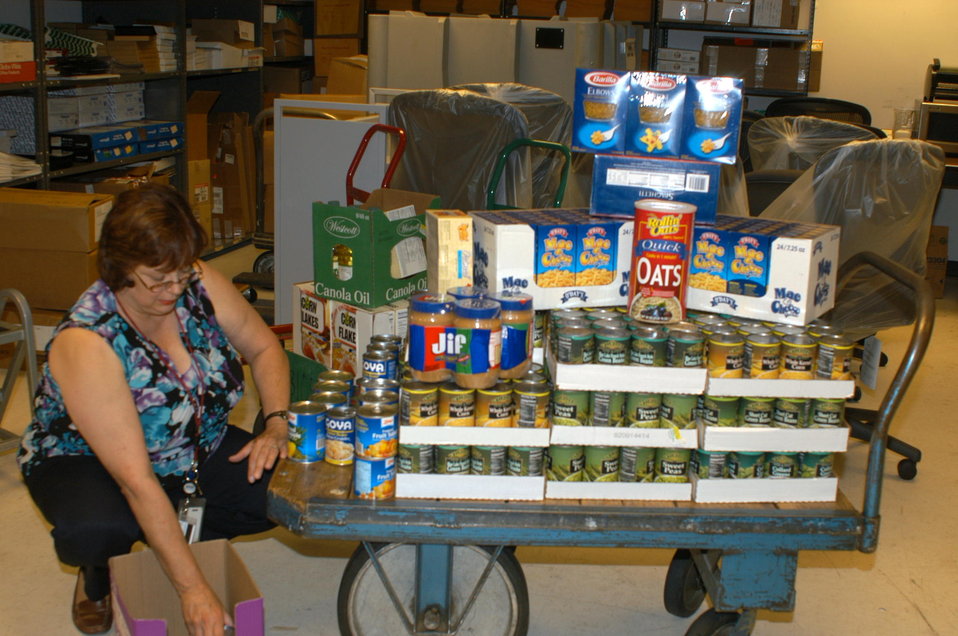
Sierra Exif JPEG